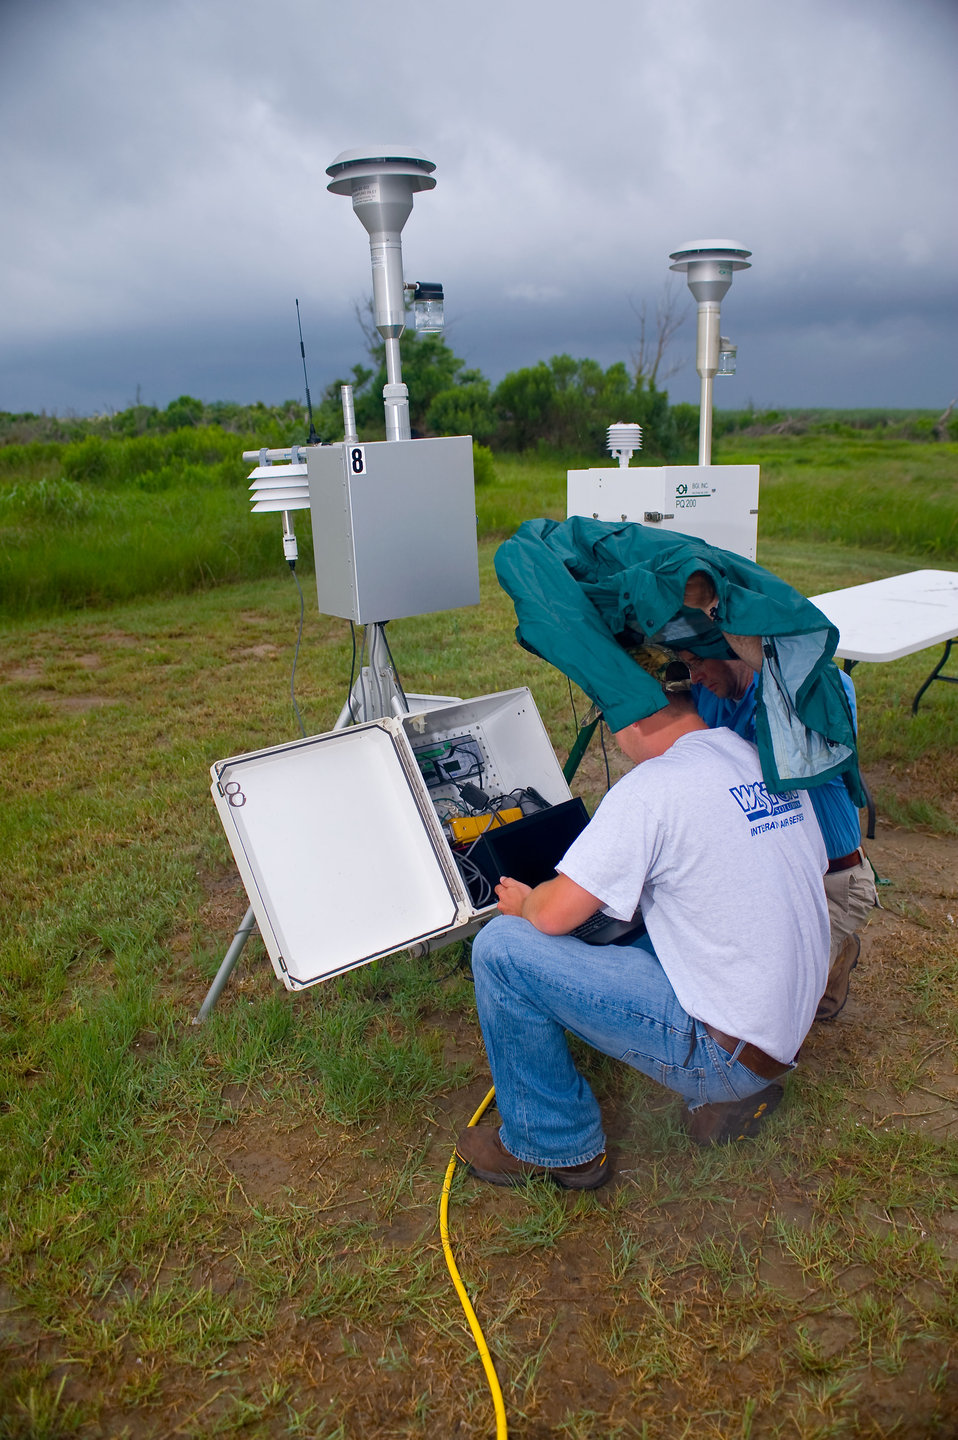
June 4, In a race against the rain

John Williams and AJ Veith race to retrieve air monitoring data before a summer storm. Air monitoring station at Grand Isle State Park.